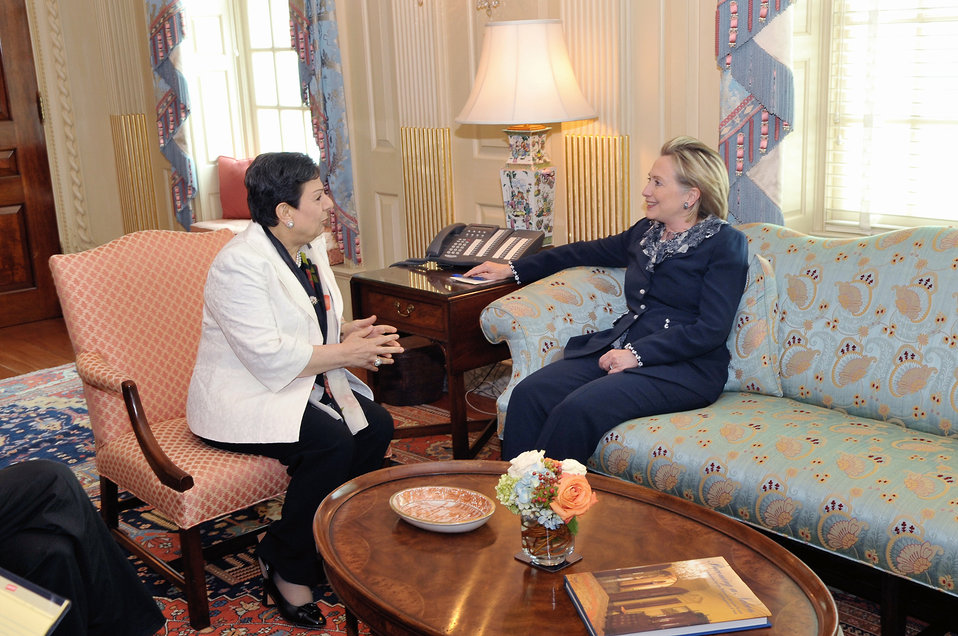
Secretary Clinton Holds a Meeting With PLO Executive Committee Member Hanan Ashrawi

U.S. Secretary of State Hillary Rodham Clinton holds a meeting with PLO Executive Committee Member Hanan Ashrawi at the U.S. Department of State in Washington, D.C., on July 8, 2010.